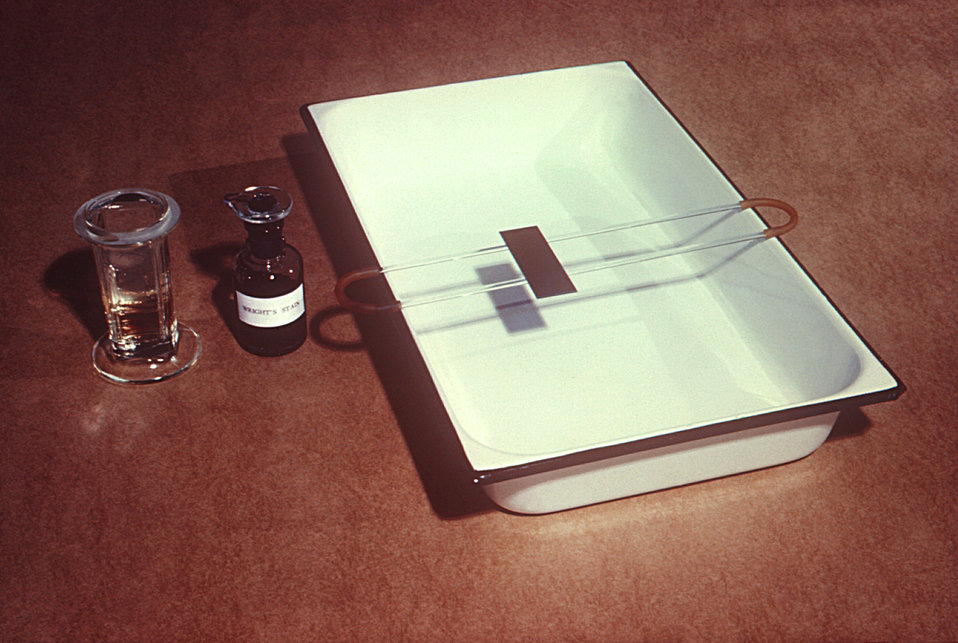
This slide will be stained using the Wright staining technique, which is used when staining blood smears for parasites.